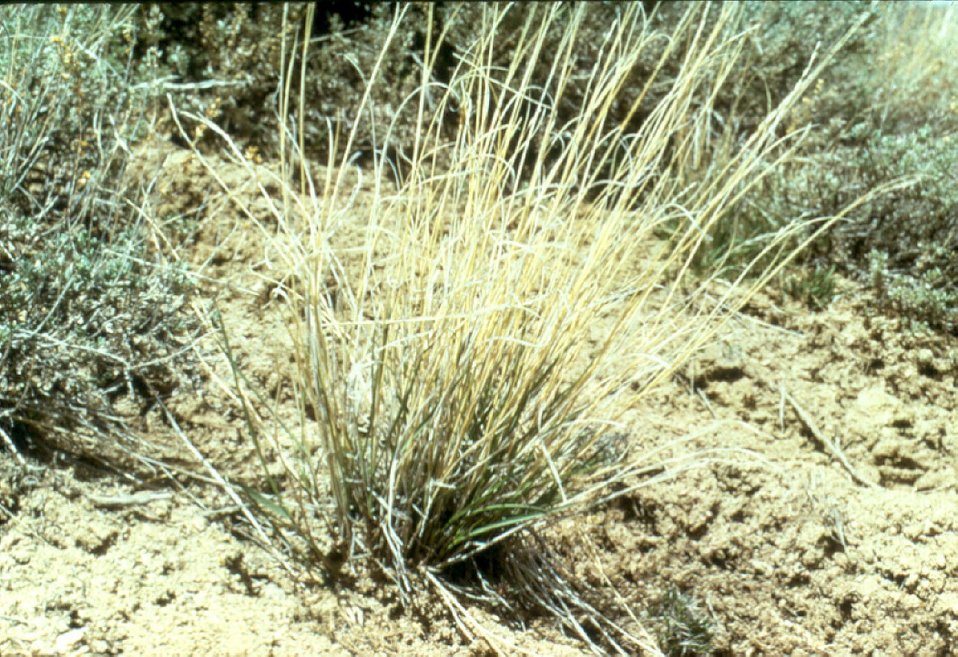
Blue Bunch Wheat Grass Salmon FIeld Office UCSC Upper Columbia Salmon Clearwater District